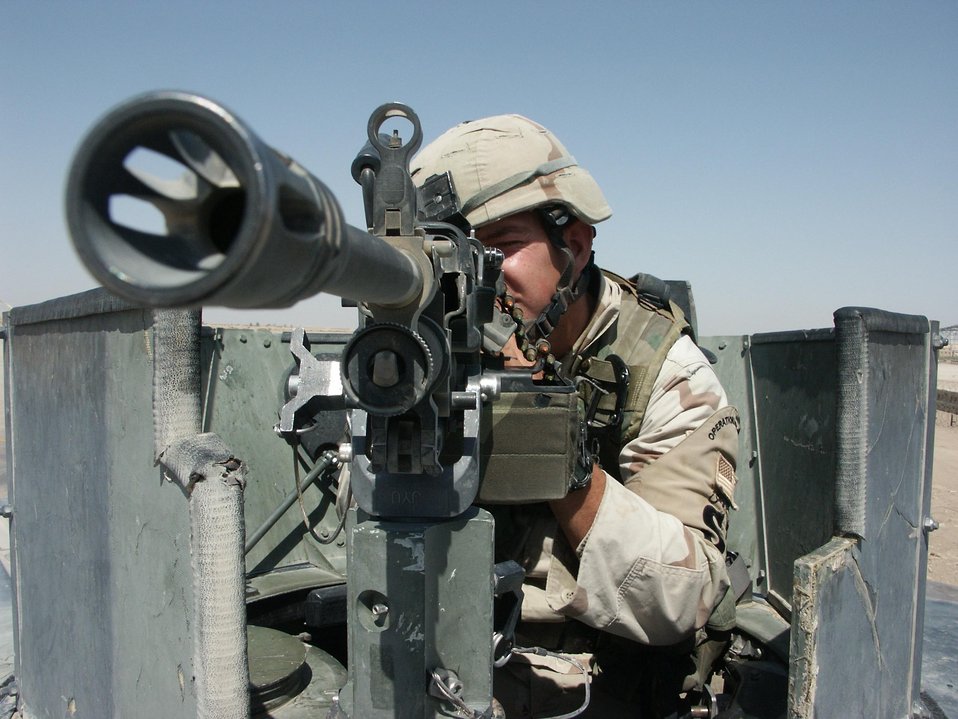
Focus

TALLIL AIR BASE, Iraq -- Senior Airman Kristofer Kline, 822nd Security Forces Squadron, focuses in on a target while standing atop his HUMVEE. Members of the 822nd SFS, supporting Operation Iraqi Freedom, are beginning to return home after serving more than five months here.